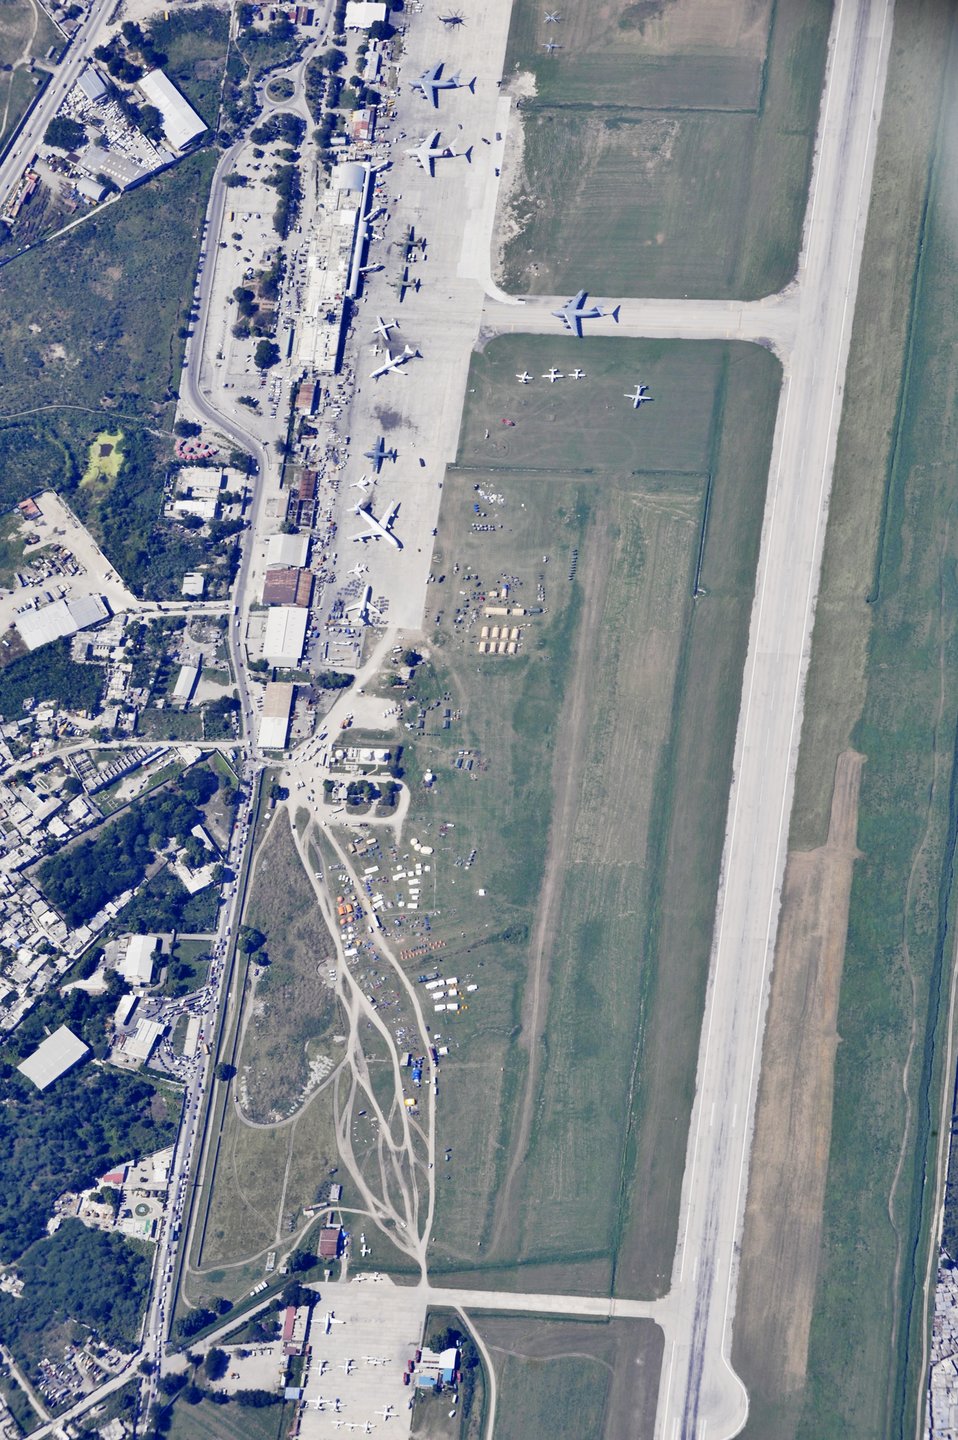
OC-135 crews assist from 15,000 feet

Military and civilian aircraft sit on the flightline in Toussaint L'Ouverture International Airport in Port-au-Prince, Haiti, Jan. 16, 2010, as viewed from the OC-135B Open Skies aircraft. The OC-135 is with the 45th Reconnaissance Squadron at Offutt Air Force Base, Neb.